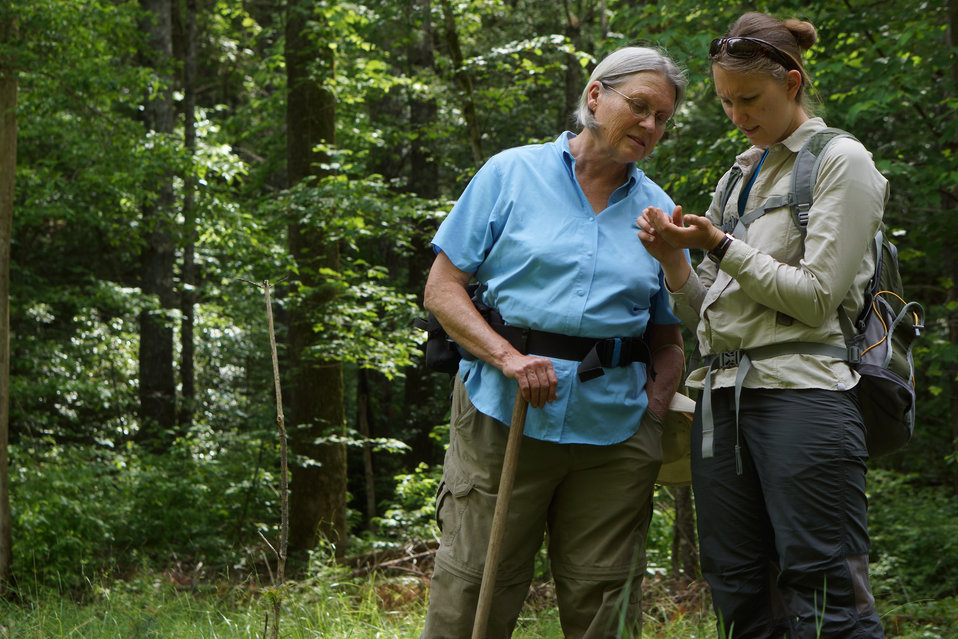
Lynn Eastin and Emily Ulrich

In May, bog conservationists from Tennessee, North Carolina, and Georgia convened in the north Georgia mountains for the spring, 2014 meeting of the Bog Learning Network. The event provided an opportunity for biologists to see, first hand, the result of management efforts at two north Georgia bogs. More importantly, the outings provided an opportunity to share innovative approaches to bog management, such as the role of the Georgia Plant Conservation Alliance in conserving rare plants and coordinating a cadre of volunteers to work on bog management.

The Bog Learning Network was convened in the winter of 2013 as a way to bring together people working for bog conservation across the Southern Appalachians. Southern Appalachian bogs are one of North America’s rarest habitats and home to many rare plants and animals.